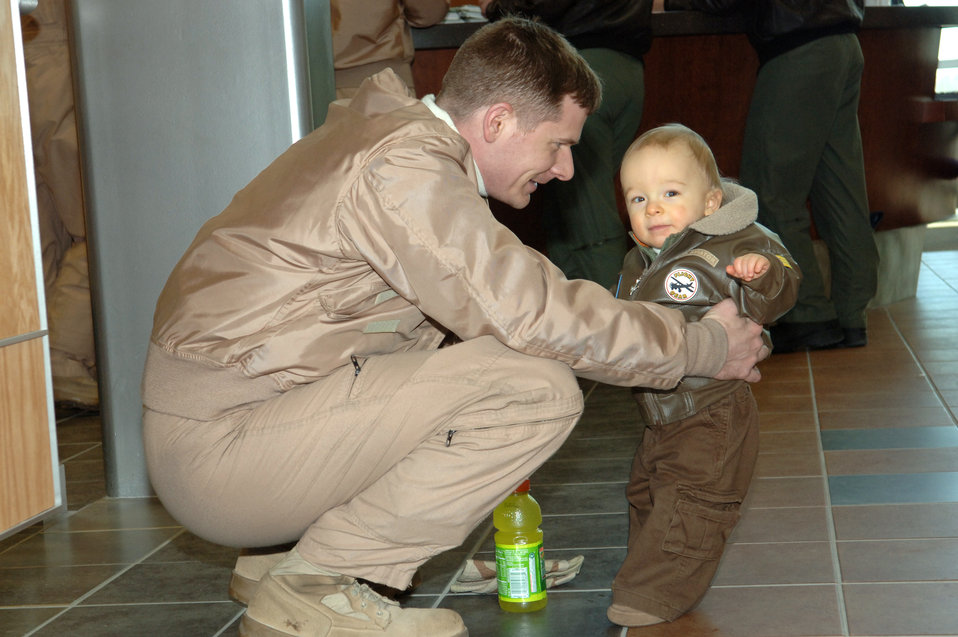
Pilots return to Ellsworth

Capt. Brian Crawford holds his son, Will Crawford, upon his return home from a five-month deployment to Southwest Asia Jan. 21 at Ellsworth Air Force Base, S.D. Captain Crawford was deployed to Southwest Asia in support of operations Iraqi Freedom and Enduring Freedom. He is a B-1 Lancer pilot with the 28th Bomb Wing.